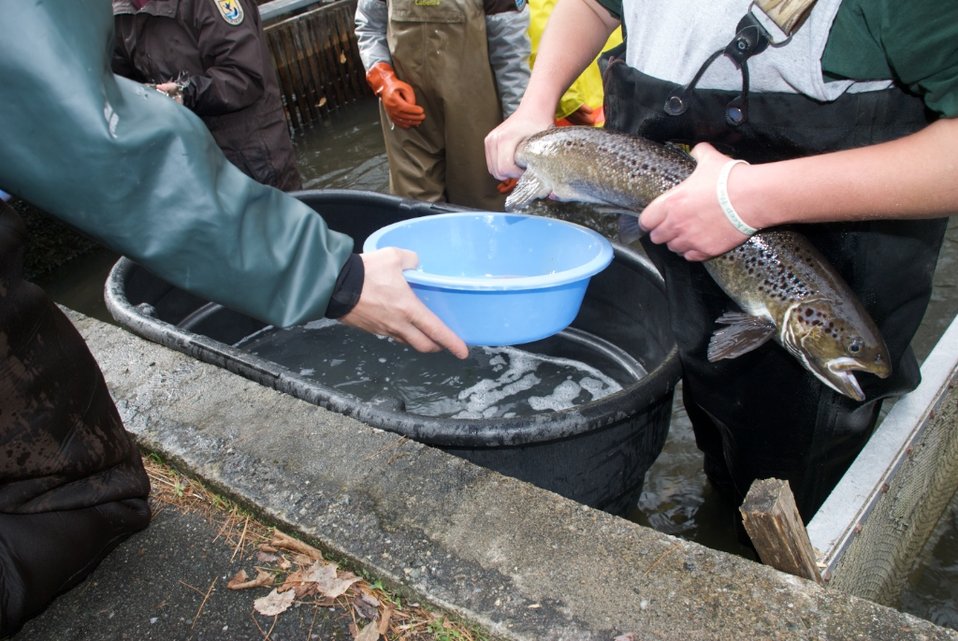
Richard Cronin National Salmon Station

Volunteers harvesting salmon eggs at the Richard Cronin National Salmon Station in Sunderland, MA.